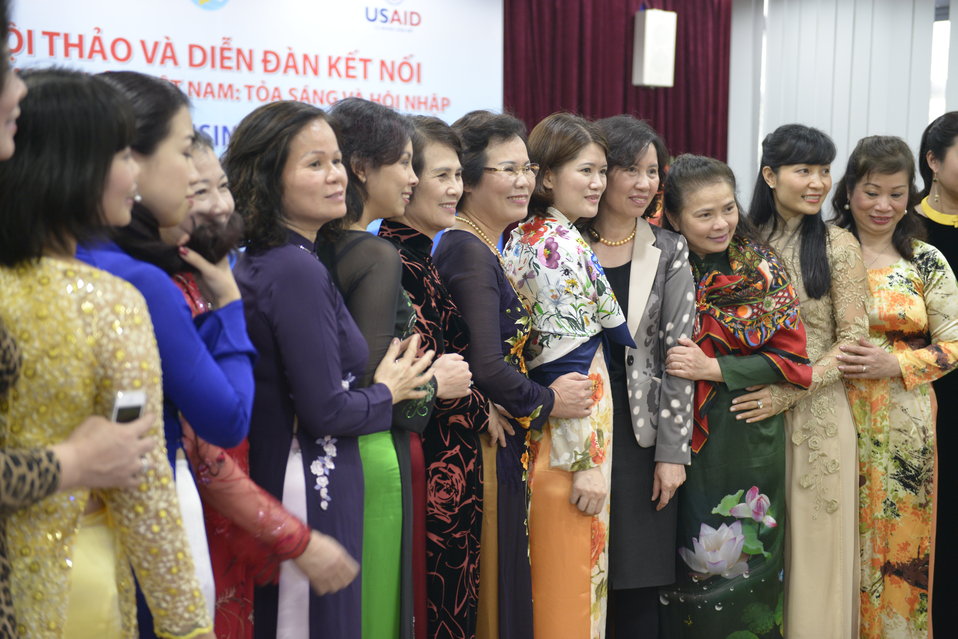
International Women's Day Seminar for female entrepreneurs

Phu Tho, Vietnam. March 1, 2014.